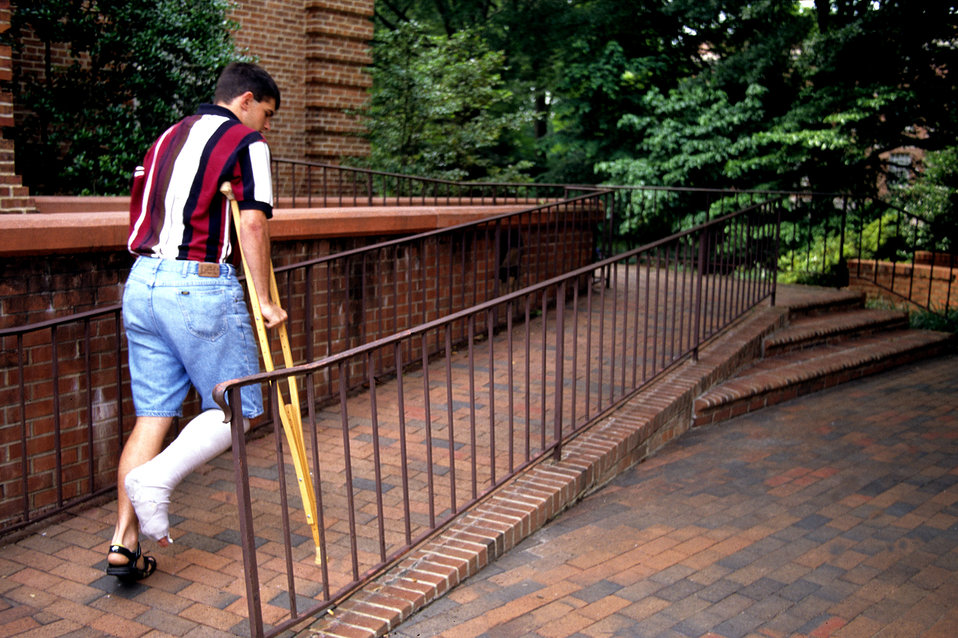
This image, as well as PHIL# 9016, and 9017, all depicted people with reduced states of mobility, who were accessing a walkway ramp while using either crutches, or a wheelchair. In this particular view, a brick switch-back ramp with its black metal railings, had been added to the entrance on an older, traditionally-designed fa�e, whereupon, the ramp began not far from where the stairs had been positioned, thereby, making the accessibility route short, and easy to find, which stands in stark contrast to PHIL# 9012. This made the choice in access route easier for visitors, demonstrating that some ramps, as well as other 'stepless'-entrance features, can benefit people who are ambulatory, as well as those who use wheelchairs.